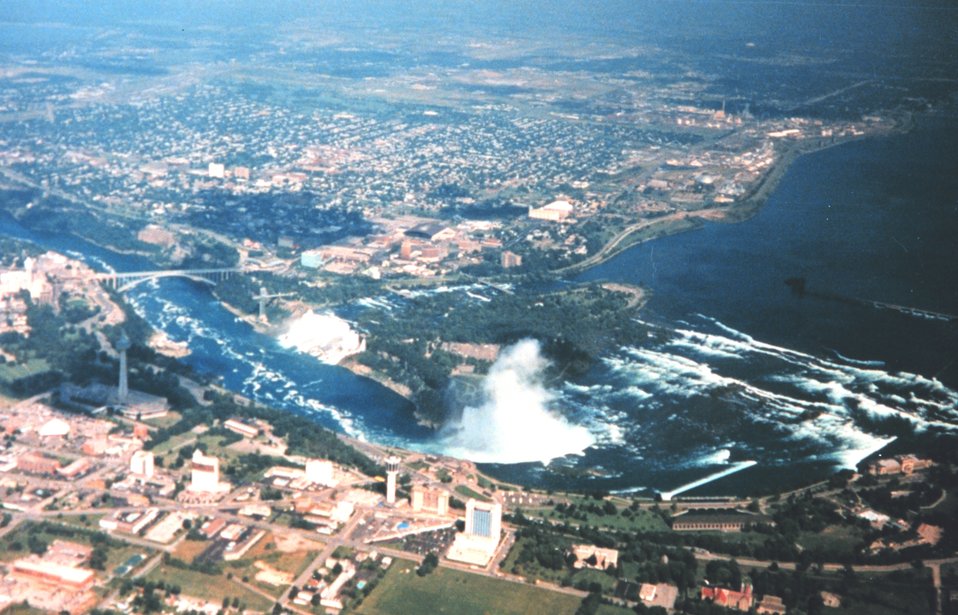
Niagara Falls as seen during Shoals Lidar survey of Niagara River.